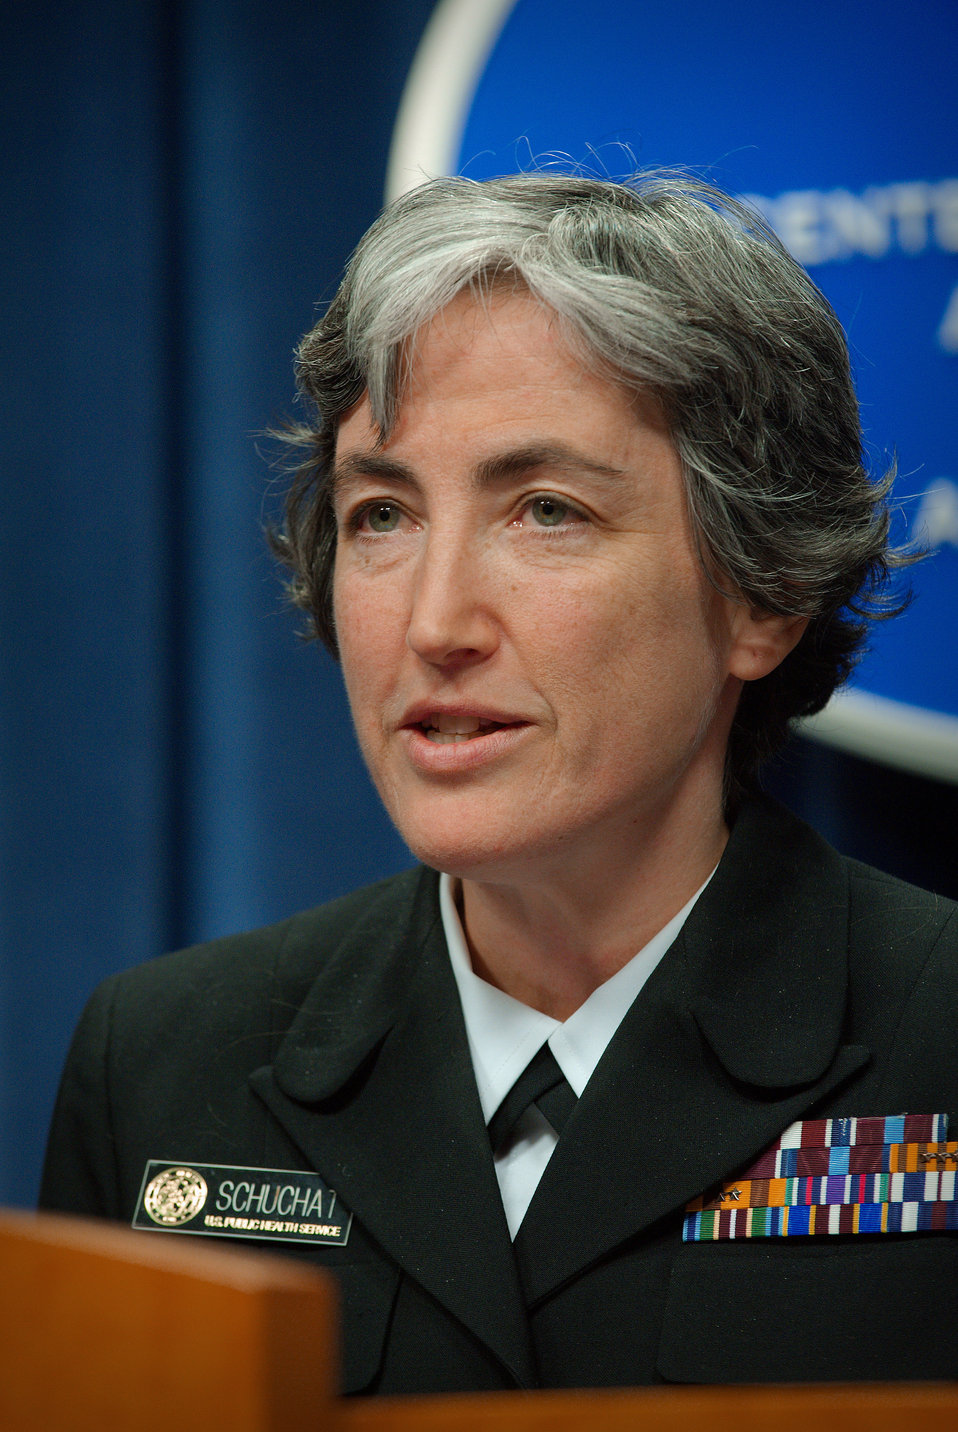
This 2009 photograph depicts the Interim Deputy Director for Science and Public Health Program, Rear Admiral Anne Schuchat, M.D., at the podium during a Centers for Disease Control (CDC) press briefing held in order to discuss an update in the investigation of cases of swine influenza in California and Texas. CDC issued an MMWR dispatch on Tuesday, April 21, 2009. This briefing updated information included in the dispatch.